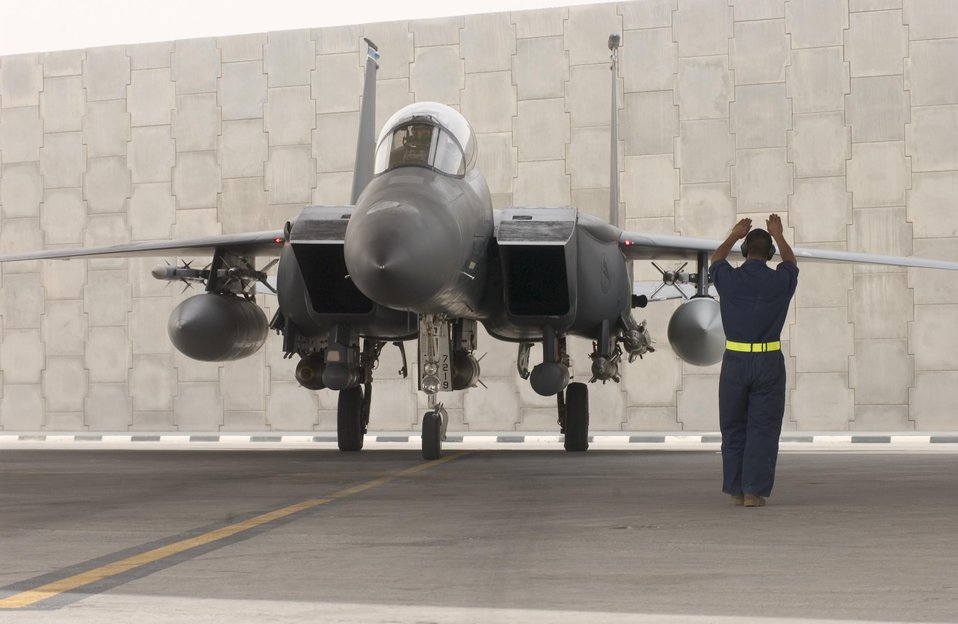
A final look

SOUTHWEST ASIA -- An F-15E Strike Eagle from the 379th Expeditionary Fighter Squadron at a forward-deployed location is guided in after completing a mission supporting Operation Iraqi Freedom.